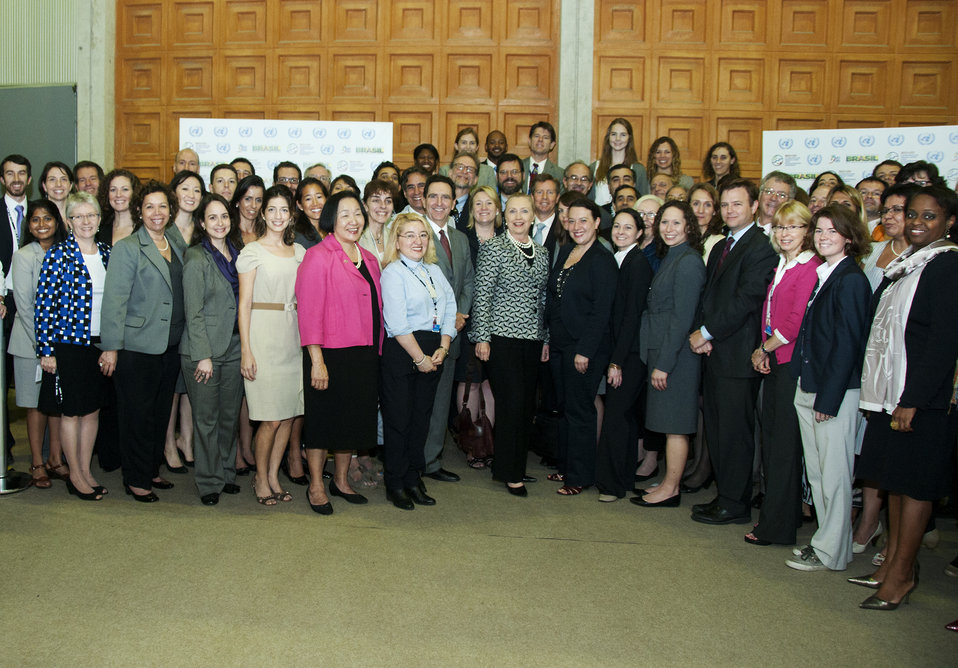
Secretary Clinton Poses for a Photo With Members of the U.S. Rio 20 Delegation

U.S. Secretary of State Hillary Rodham Clinton poses for a photo with other members of the U.S. delegation while attending the Rio 20 Conference in Rio de Janeiro, Brazil on June 22, 2012.